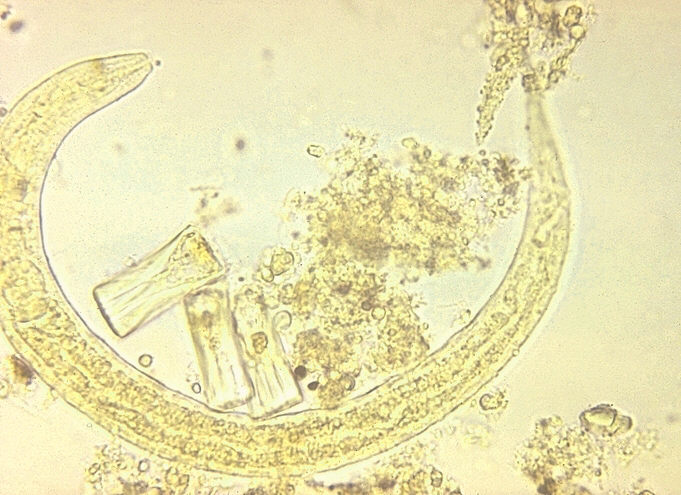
Rhabditiform larva of hookworm.